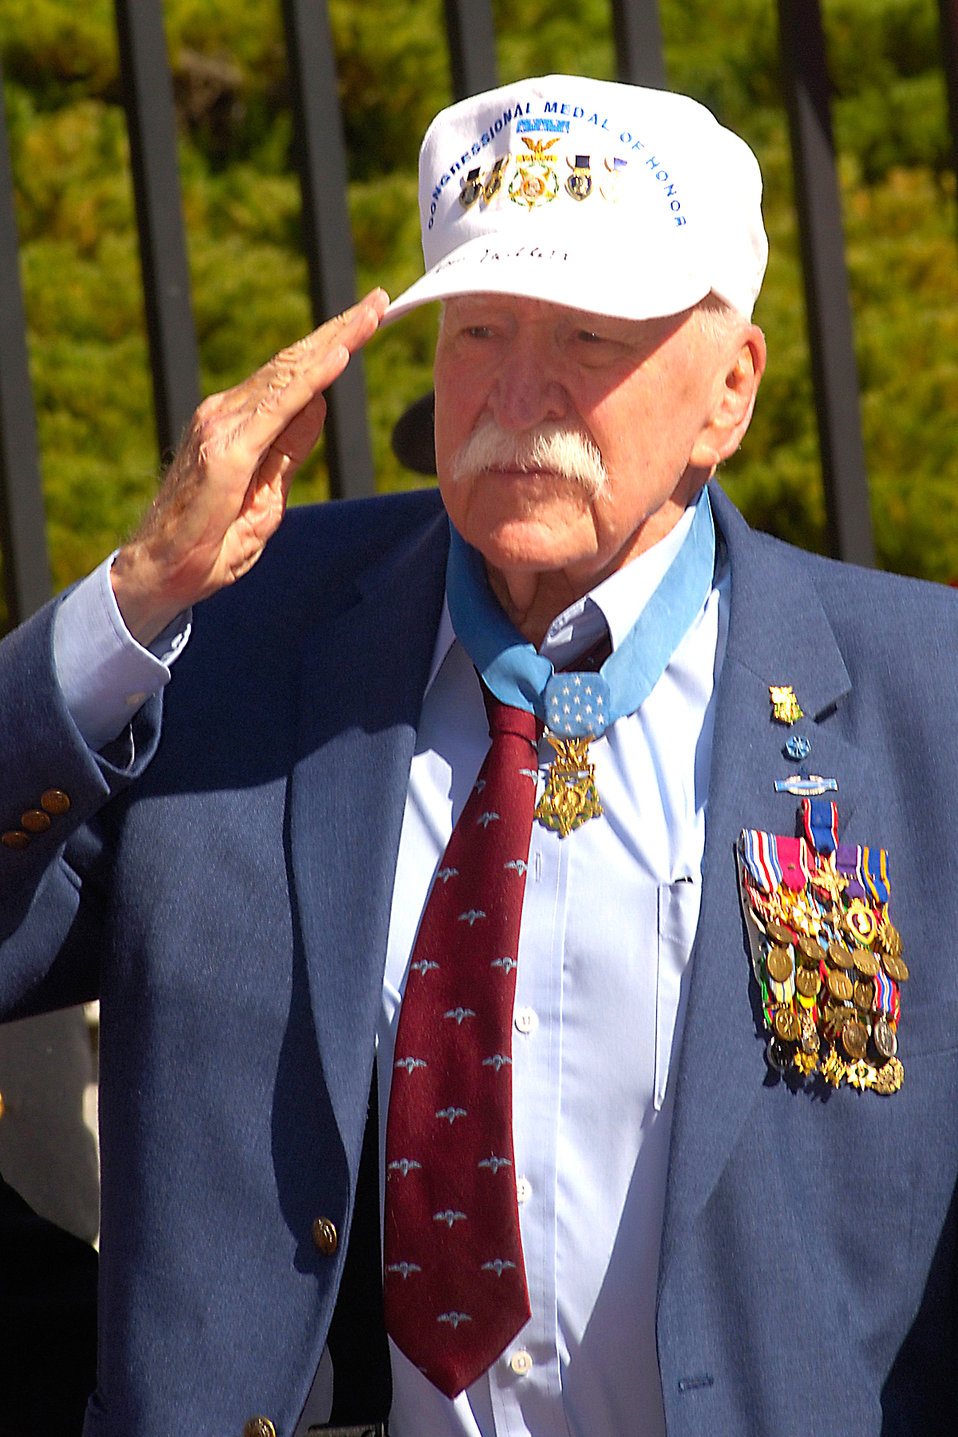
Medal of Honor recipients honored in Boston

Retired Army Col. Lewis Millett offers a salute during a special ceremony Sept. 27 at the State House in Boston. The ceremony honored more than 70 Medal of Honor recipients in Boston for their annual convention. Colonel Millett, who was a captain at the time, received the Medal of the Honor in 1951 for leading an uphill bayonet charge against enemy forces during the Korean War.